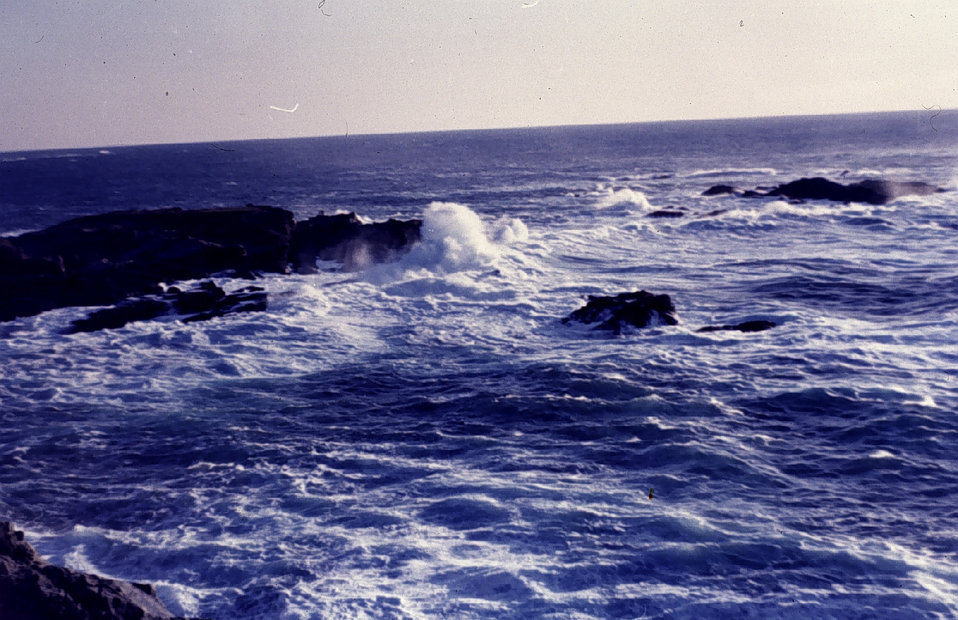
A wind swept- sea swept sort of place.